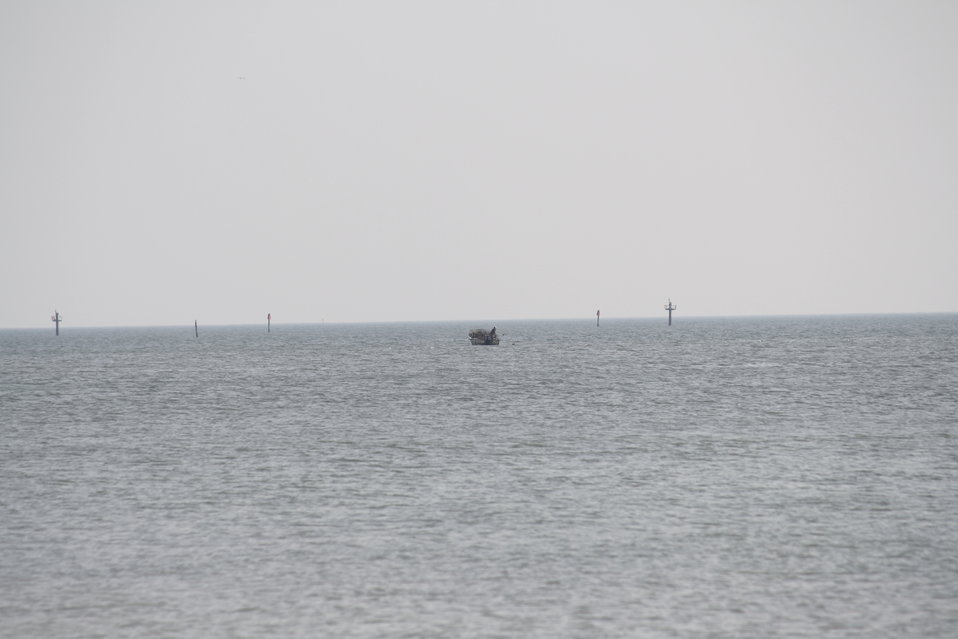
Bavon Beach project

The two homeowners’ associations on Bavon Beach have agreed to postpone construction on two permitted revetment projects to protect their properties. Instead, they are considering and exploring this community-wide shoreline management project that will prevent the fragmentation and degradation of this largely contiguous beach.